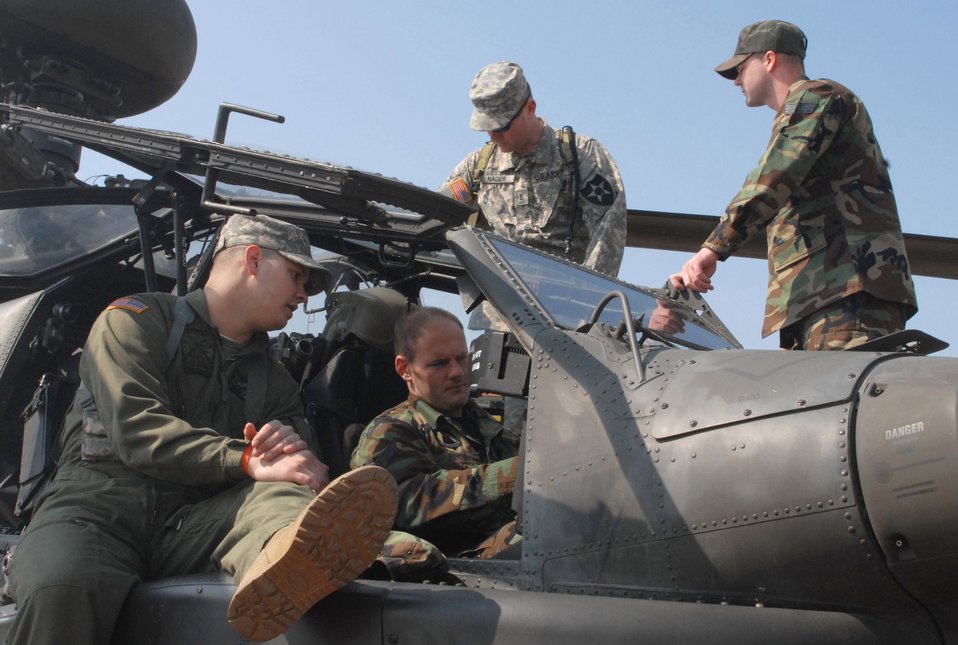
Army shows off Apache at Kunsan

Chief Warrant Officer 2nd Class Thomas Weekley (front left), a pilot with Charlie Company, 42nd Aviation Battalion, from Camp Humphreys, South Korea, discusses the AH64D Apache helicopter with Senior Airman Richard Addis, an electronic warfare craftsman with the 8th Maintenance Squadron at Kunsan Air Base, South Korea, while Chief Warrant Officer 3rd Class Pat Nager (rear left), a standardization instructor pilot with Charlie Company, answers questions about fire rescue operations from Senior Airman Joshua McGinnis, a firefighter with the 8th Civil Engineer Squadron. Army aviators brought the helicopter to Kunsan March 10 to inform Airmen about the aircraft and the Army's current mission in South Korea.